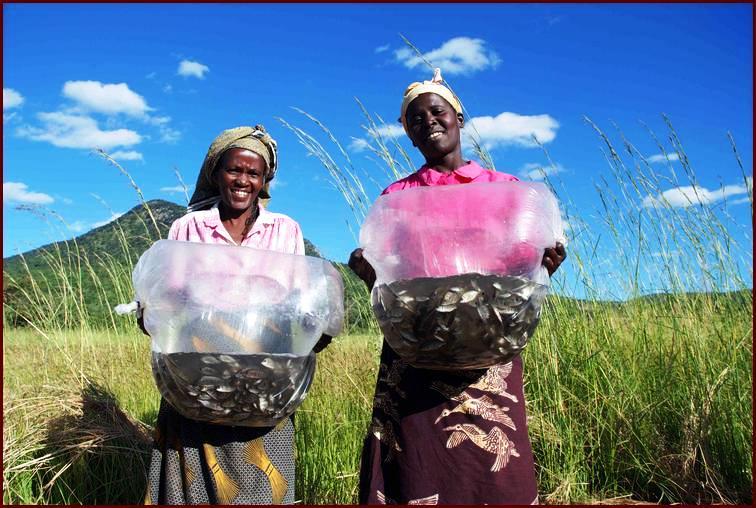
Zambian Women Hold Bags of Tilapia Fingerlings

Women in Zambia's Eastern Province hold bags of tilapia fingerlings in June 2007. The villagers are learning fish farming from US Peace Corps volunteers.